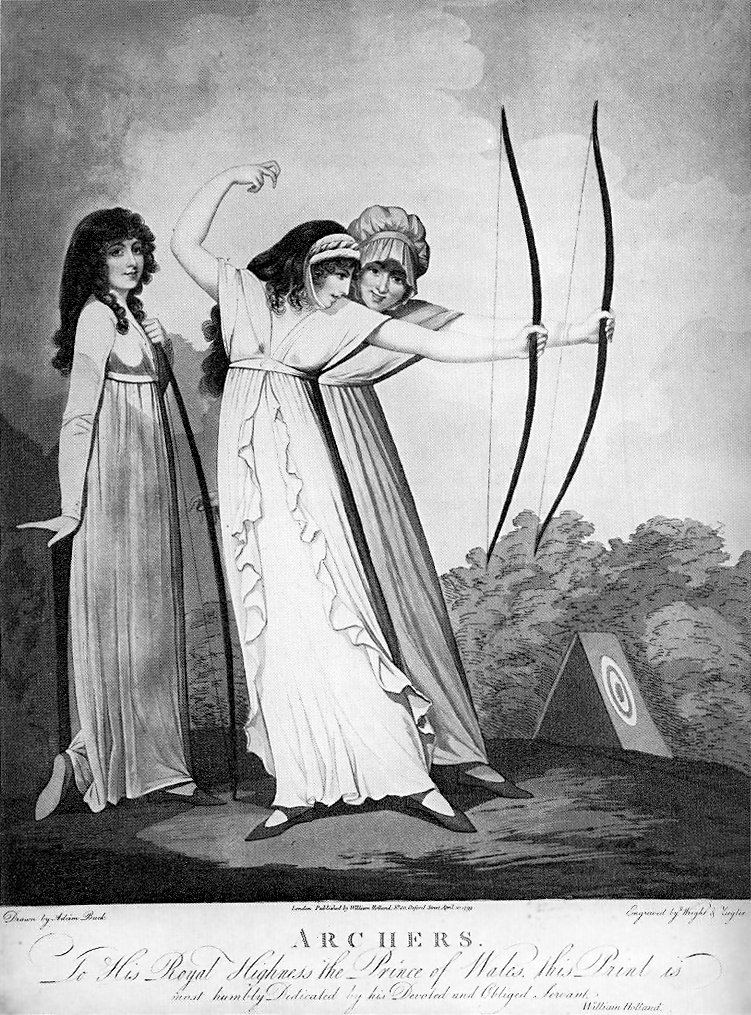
1799-pinup-print-archers-Adam-Buck-unbound-hair